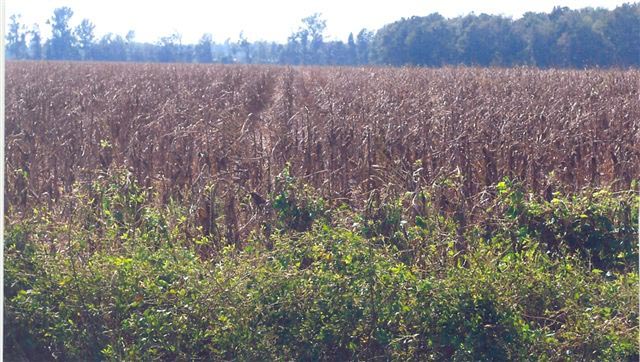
Corn crop damage caused by Hurricane Irene in North Carolina, on Monday, August 29, 2011.